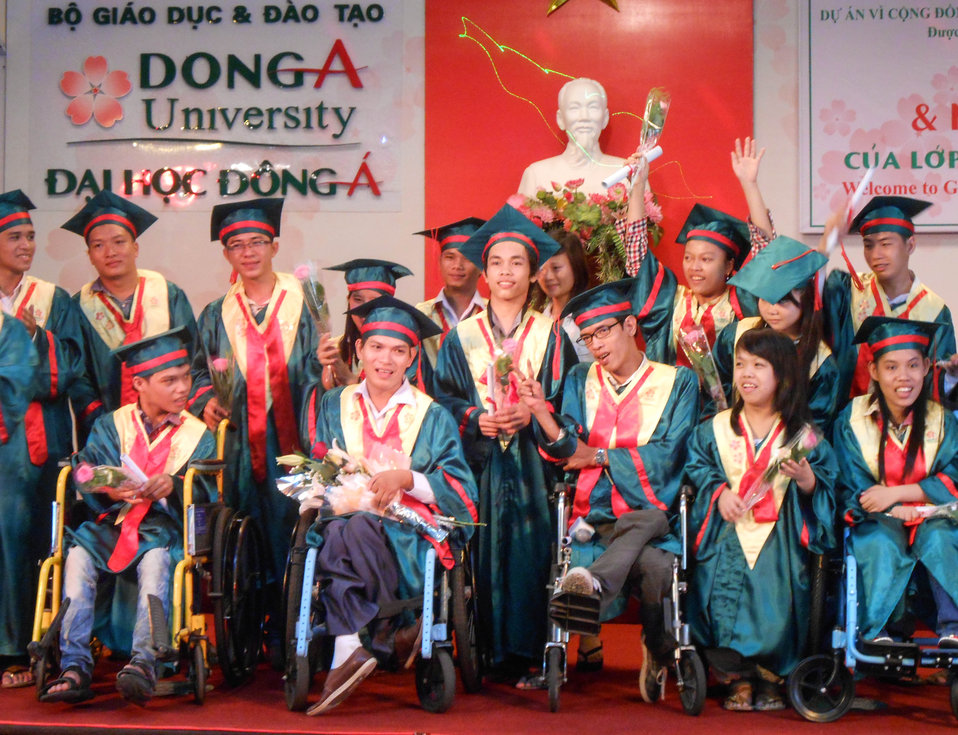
Dong A University IT Program for Students with Disabilities

Dong A IT Program graduates celebrate in Danang. Photo: CRS

First Group of Students with Disabilities Graduates from IT Program in Danang
in Support to Vulnerable Populations Press Review

DANANG, September 5, 2013 - After nine months of intensive classroom training and on-the-job training, the first group of 19 students with disabilities graduated from IT training program (ITTP) at Dong A University in Danang. Students attending ITTP at Dong A University received full scholarships and living support funded by the U.S. Agency for International Development (USAID) through Catholic Relief Services (CRS). During their training, the students learned skills in graphic design and website development.

Two companies, Minh Phuoc and HRI Vietnam plan to recruit five students from the graduating class. Dong A University and CRS will continue to link students to different employers to support students finding jobs.

Since 2007, USAID and CRS have collaborated with the Hanoi College of IT, Van Lang University in Ho Chi Minh City, and Dong A University in Danang to provide advanced IT training for young people with disabilities from all over Vietnam. This program has trained more than 900 students with disabilities and more than 80 percent of the program's graduates have found jobs after training.

Dong A University plans to train at least 250 students with disabilities in IT skills by 2015.